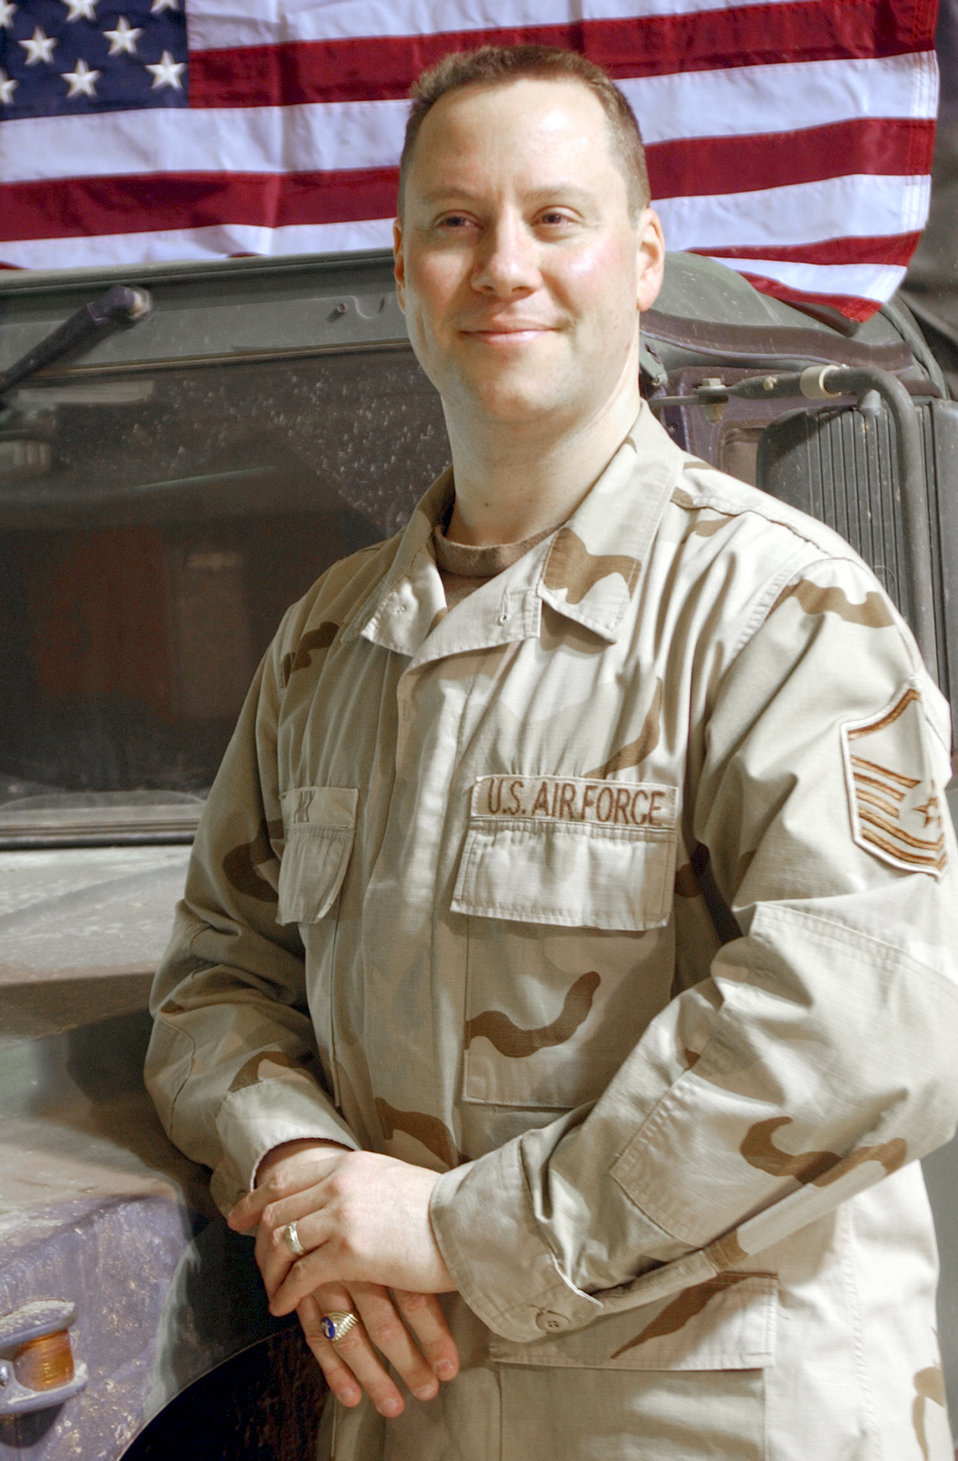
Spiderman joins OEF

KARSHI-KHANBAD AIRFIELD, Uzbekistan -- Master Sgt. Dennis Mix developed a computer tool, called Spiderman, that allows commanders to accurately track and report all airmen assigned to, and passing through, the base. Sergeant Mix is the personnel flight team chief with the 416th Air Expeditionary Wing and is deployed from McChord Air Force Base, Wash.